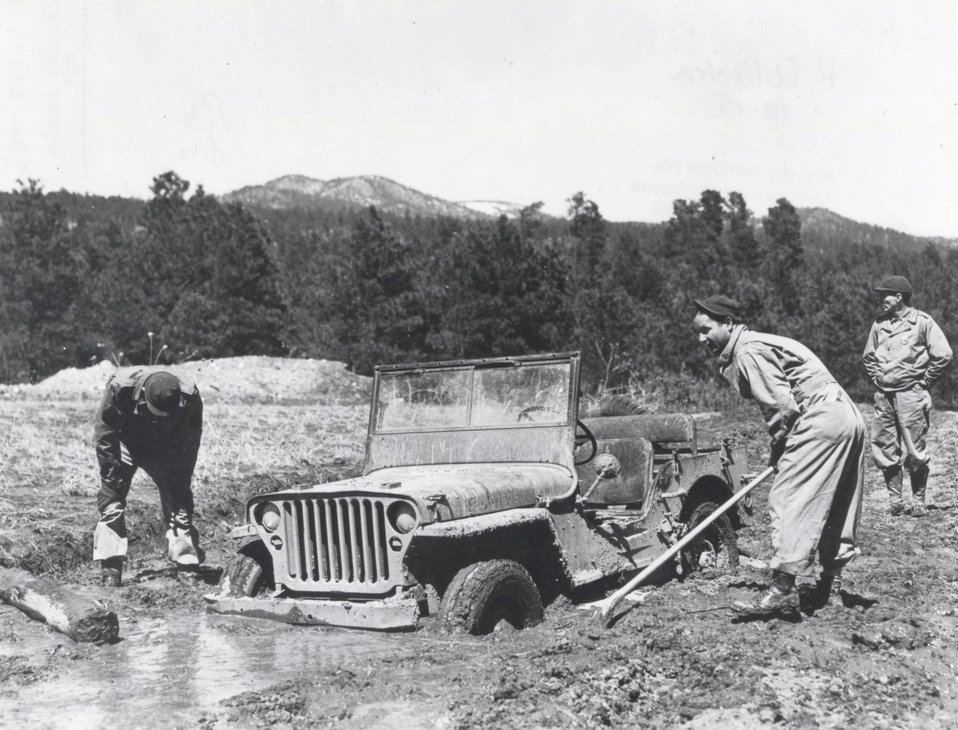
STUCK IN THE MUD 2